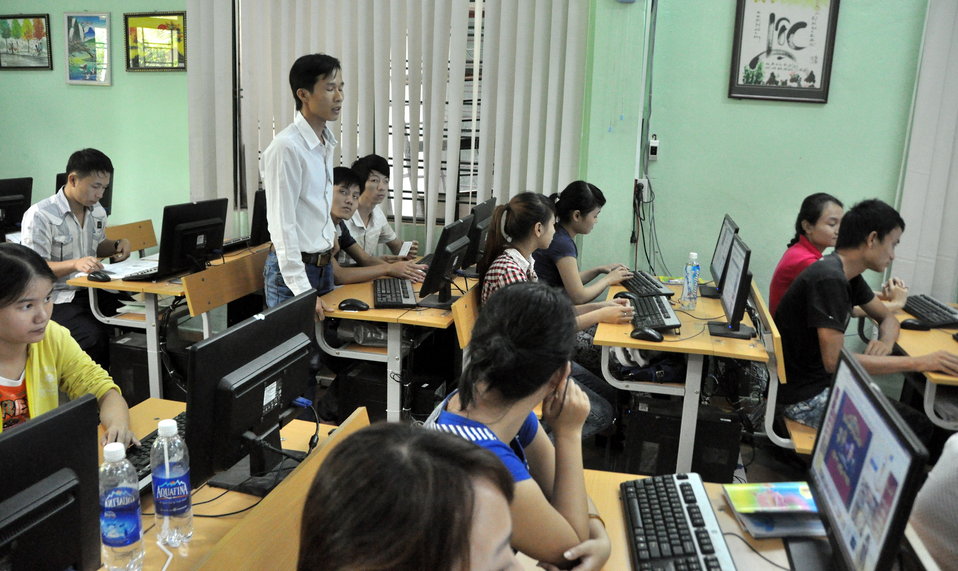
USAID Visits IT Training Program for People with Disabilities at Dong A University

Danang, Vietnam
July 17, 2013